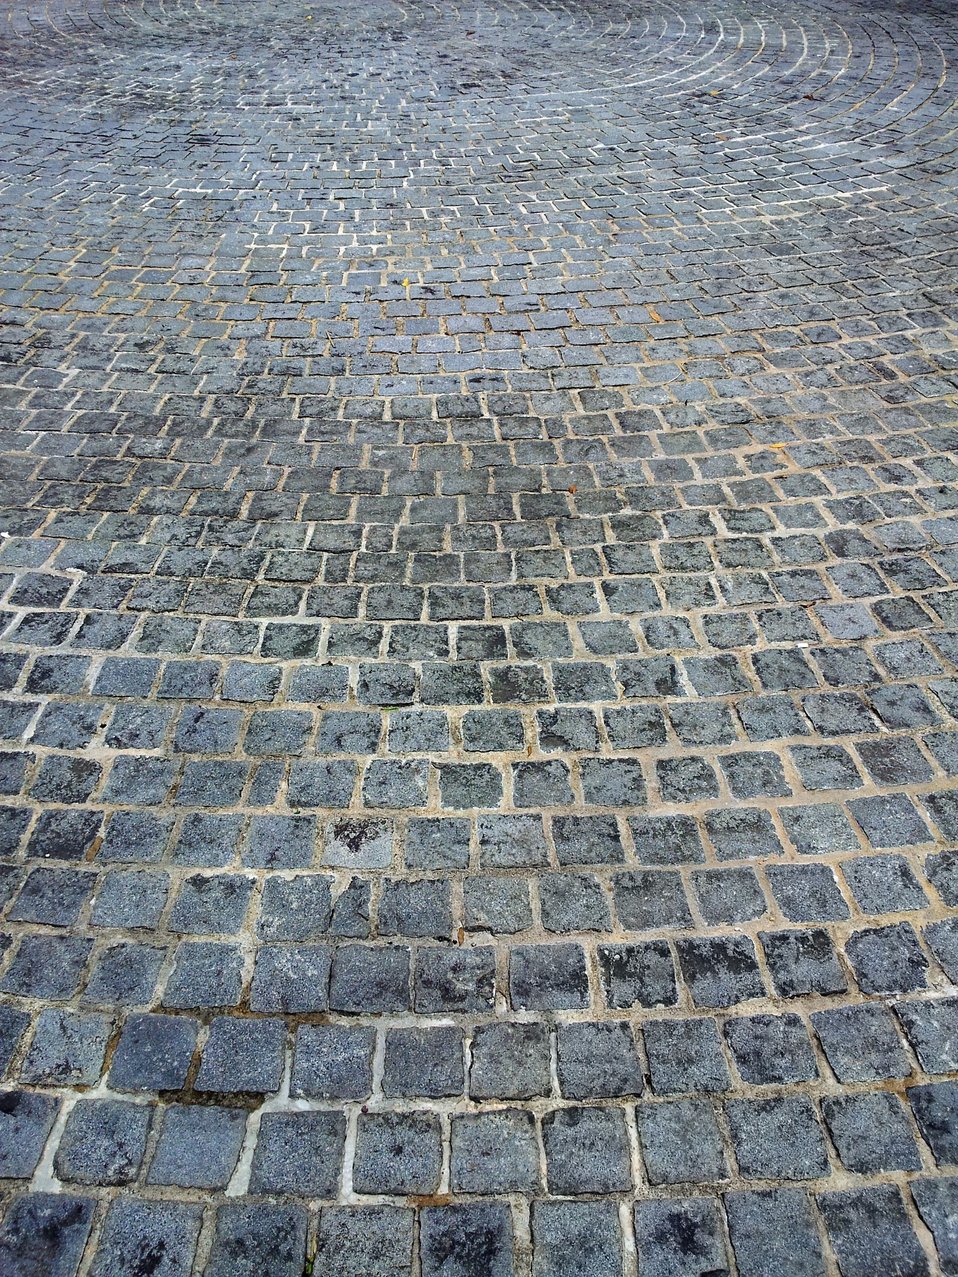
Brick ground with circle shape.